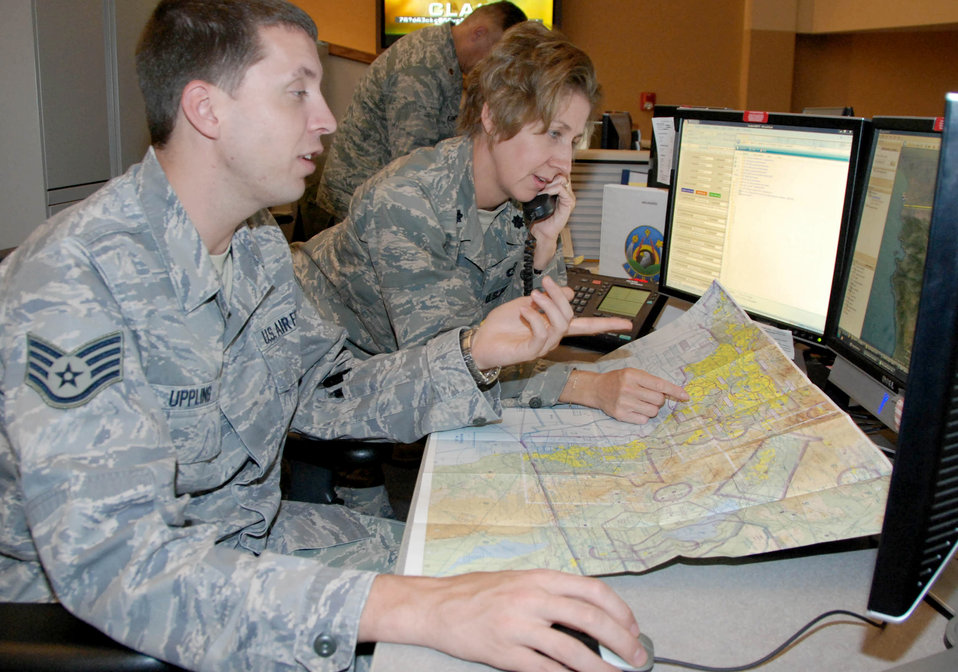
Airmen assist Mexicans in locating fatal plane wreckage

Staff Sgt. Christopher Uppling (left) and Lt. Col. Julie Eubanks establish communications with their counterparts at Mexico's Rescue Coordination Center Oct. 15, 2010, at Tyndall Air Force Base, Fla., during a search for a missing airplane near the U.S.-Mexico border. Both are controllers with the Air Force Rescue Coordination Center at Tyndall AFB and assisted in the coordination of locating the fatal crash site.